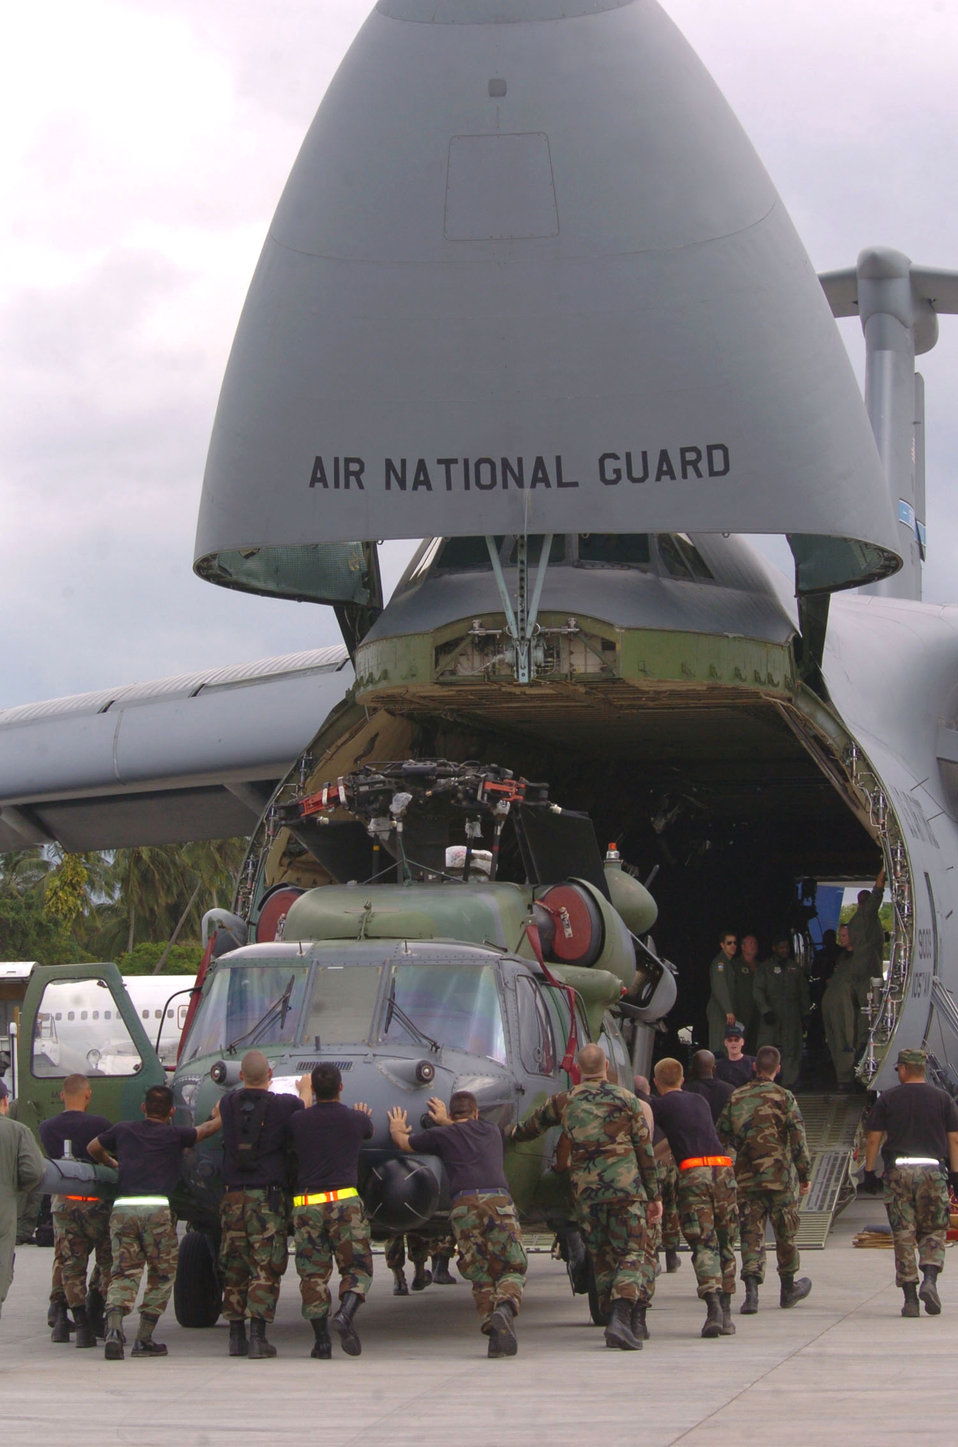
Heading home

COLOMBO, Sri Lanka -- Airmen of the 33rd Rescue Squadron load an HH-60 Pave Hawk helicopter into a C-5 Galaxy aircraft after supporting Operation Unified Assistance here. The helicopters and Airmen deployed from Kadena Air Base, Japan, and are returning to their home station after helping deliver relief goods to tsunami victims.